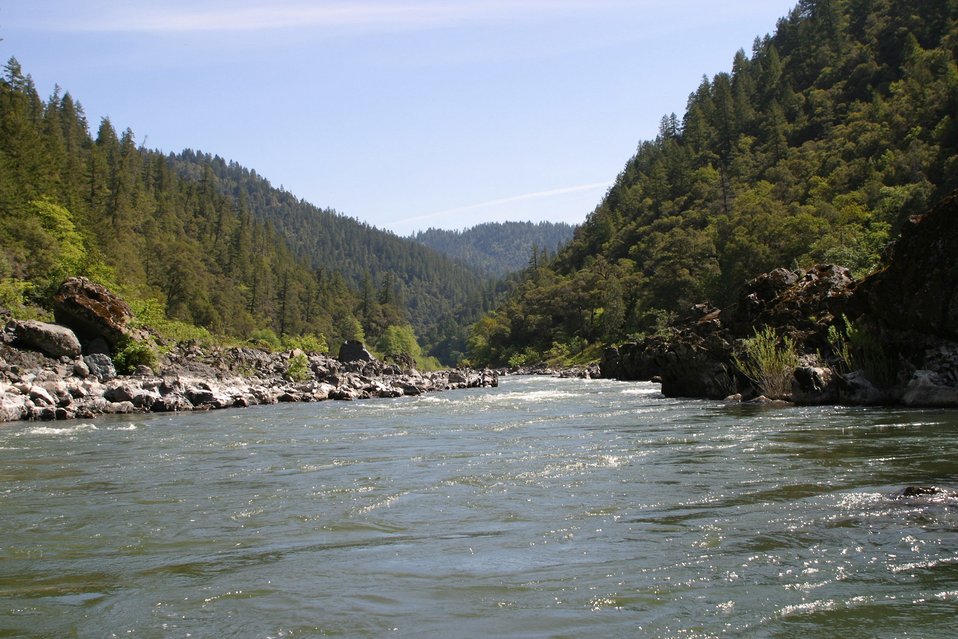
Wild section of the Rogue River from Grave Creek to Foster Bar May 19 to May 22.